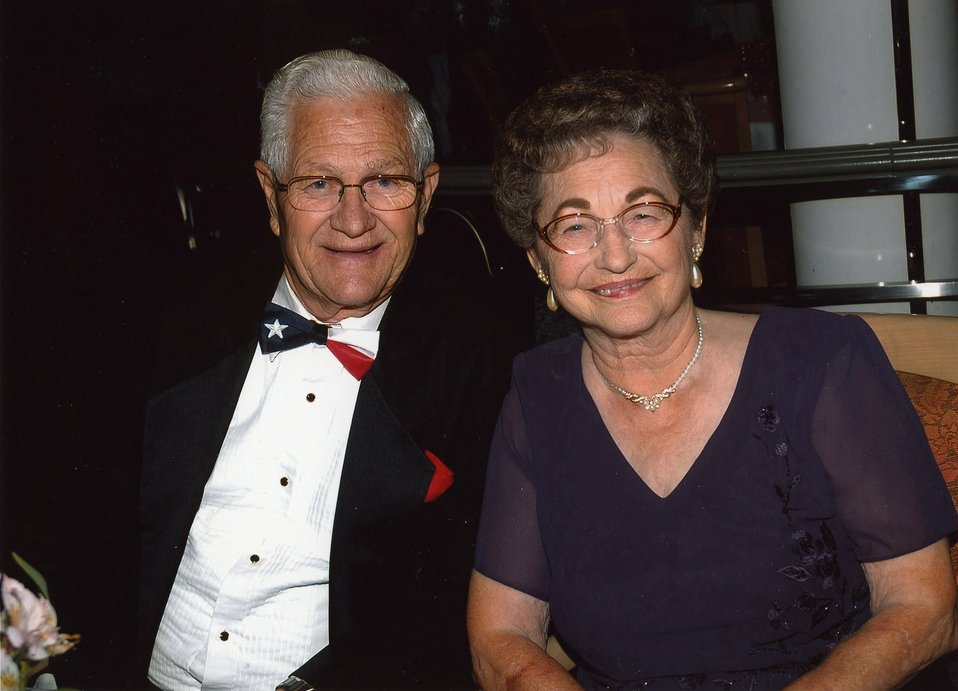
AFPC civilian retires after 57 years of service

Bill Ward and his wife of 55 years, Lu, on a recent cruise. Mr. Ward will retire Jan. 28 following 24 years of civil service and a 33-year enlisted career in which he became one of the service's first chief master sergeants.